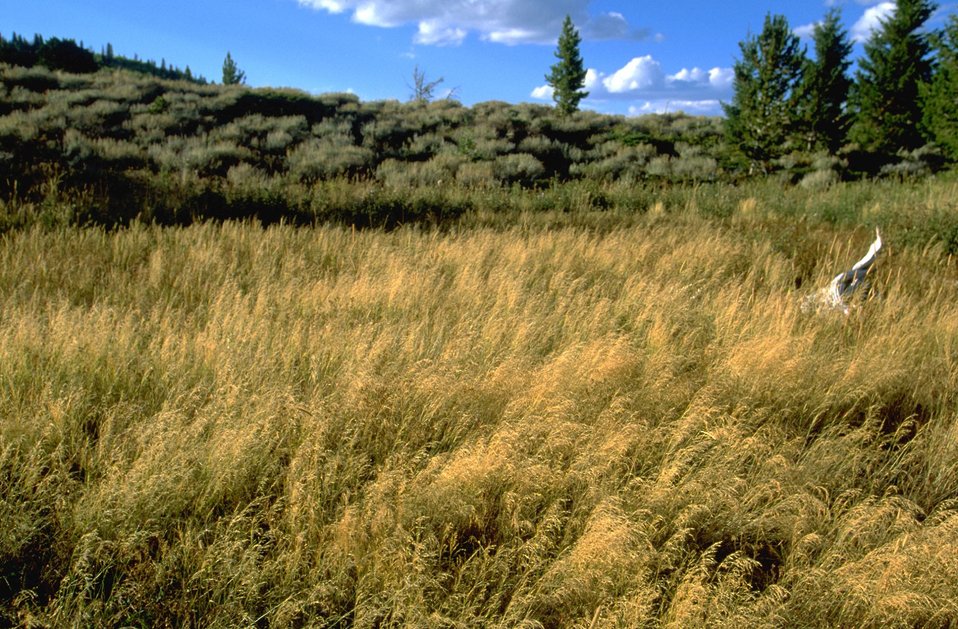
Fall grass blowing near Axolotl Lake